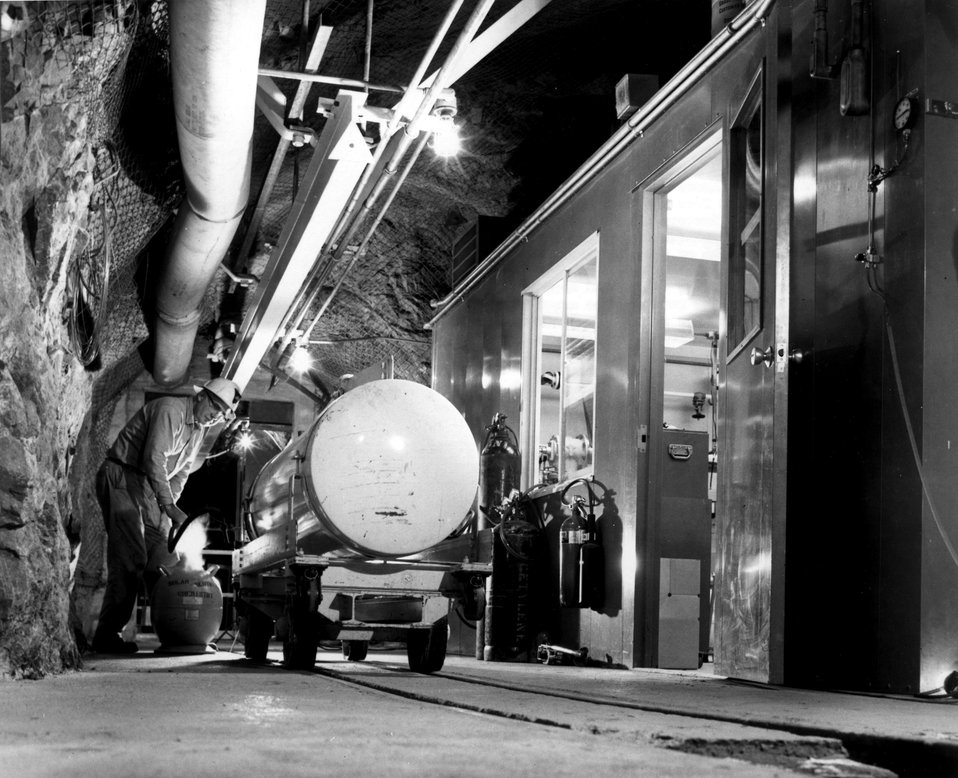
Scene at the Brookhaven solar neutrino experiment, located 4900 feet underground in the Homestake Gold Mine in Lead, South Dakota. c. 1968